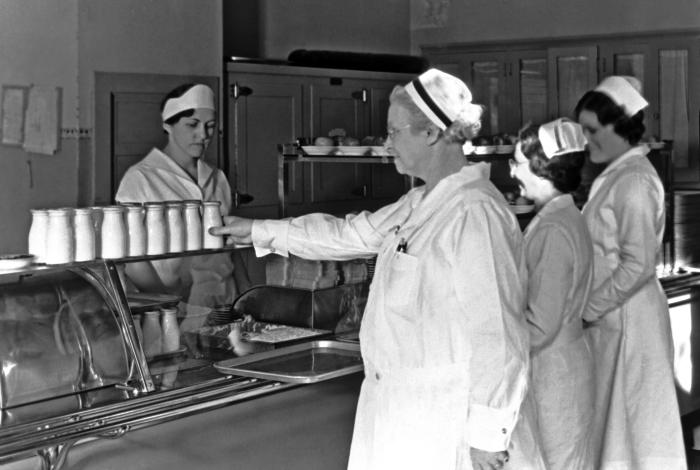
This historic 1932 photograph showed milk being served in the cafeteria of the state tuberculosis sanatorium at Ah-Gwah-Ching, Minnesota. Public health efforts, which included a pasteurization process, insured a safe supply of milk for both patients, and staff of the sanatorium.